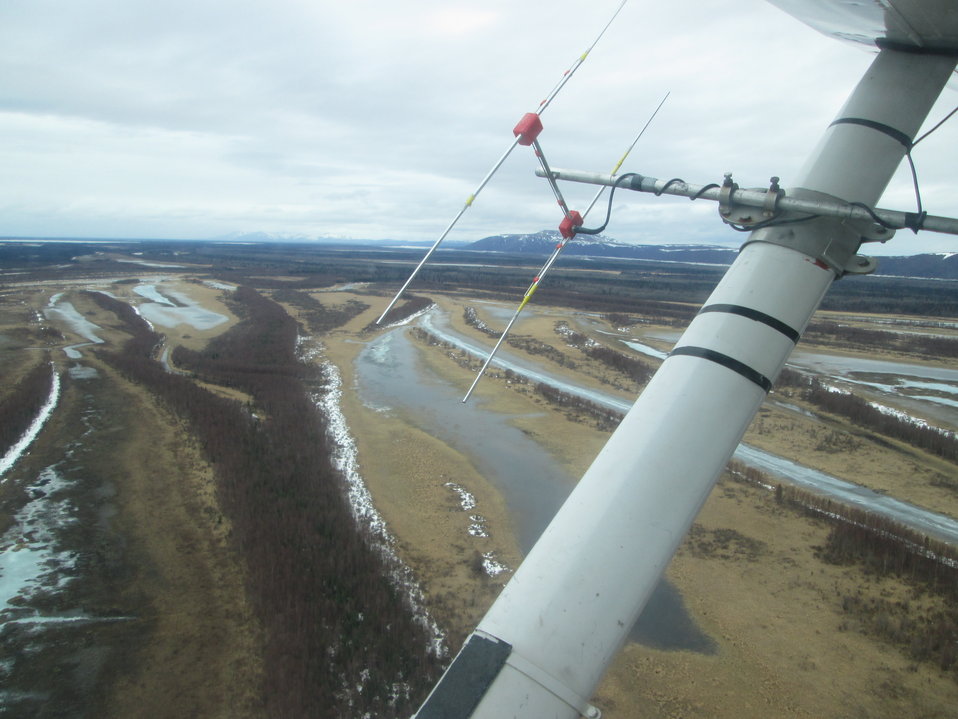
Snow Goose Telemetry

Many of the breeding Wrangel Island (located in northern Russia) snow geese winter in Washington State. During their fall/spring migrations they have been known to stop on Yukon-Kuskokwim Delta (YKD). In the winter 2013 the Washington Department of Fish & Wildlife attached transmitters to a handful of the wintering snow geese to monitor movements, stop over sites, etc. It is known that the birds use the YKD as a stop-over site but exact locations of use and size of the the flocks were unknown. In May of 2013 we flew a survey to document number of snow geese on the Yukon-Kuskokwim Delta and where they were found.
USFWS Yukon Delta NWR